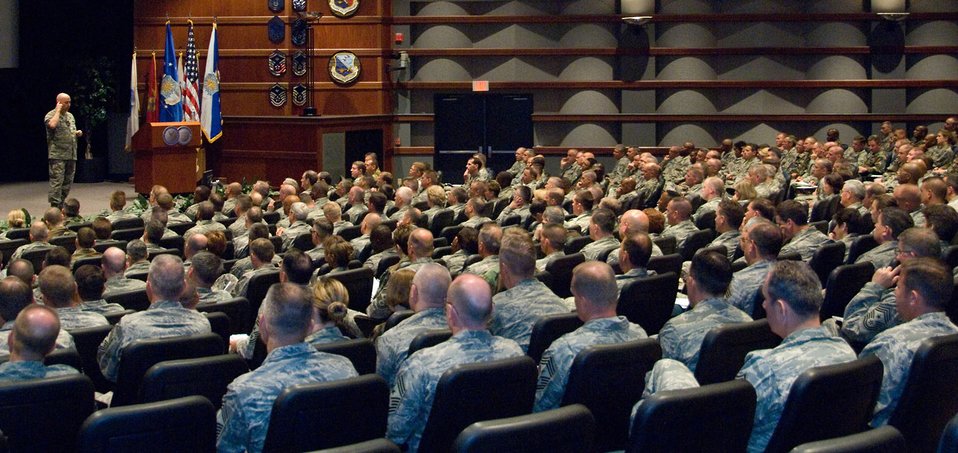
Gen Moseley Briefs Senior Enlisted Leaders Summit

The 18th Chief of Staff of the Air Force, General T. Michael Moseley, addresses more than 300 chief master sergeants during the Senior Enlisted Leaders Summit at Maxwell Air Force Base's Gunter Annex, Ala., May 21. General Moseley spoke with command chief master sergeants, career field managers and other key senior enlisted leaders about the challenges of today's Air Force and the importance of its evolution into the 21st Century.